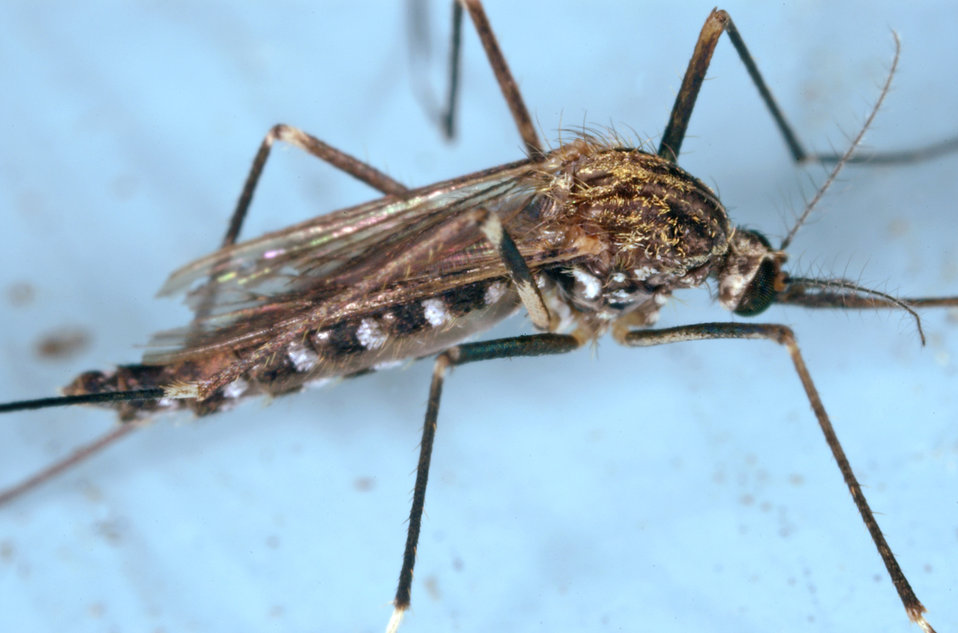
The mosquito pictured here in this 2005 photograph, was until recently known as Aedes japonicus, and is now labeled Ochlerotatus japonicus. This particular specimen was a member of the Notre Dame colony. Oc. japonicus was initially collected in the United States in New York and New Jersey, in 1998.